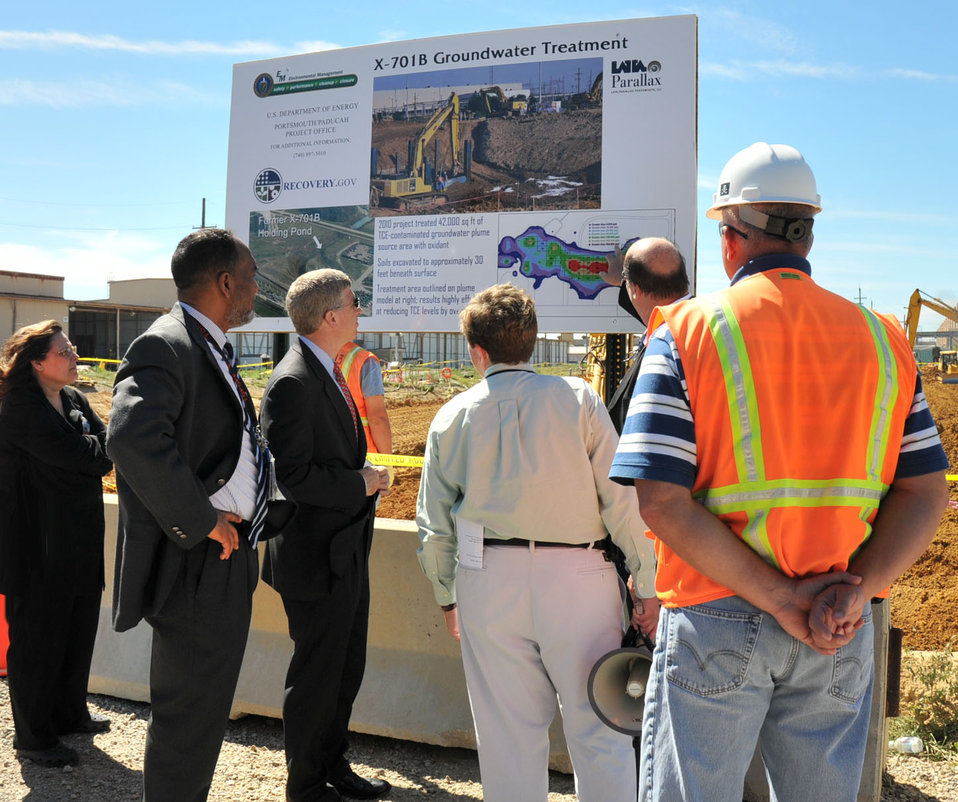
Portsmouth/Paducah Project Manager Bill Murphie points out on a project sign the trichloroethene (TCE) contamination areas within the X-701B groundwater plume area being treated at the Portsmouth Site through Recovery Act funding. Sampling results show the treatment has been highly effective in reducing TCE levels by 95% in the soils.